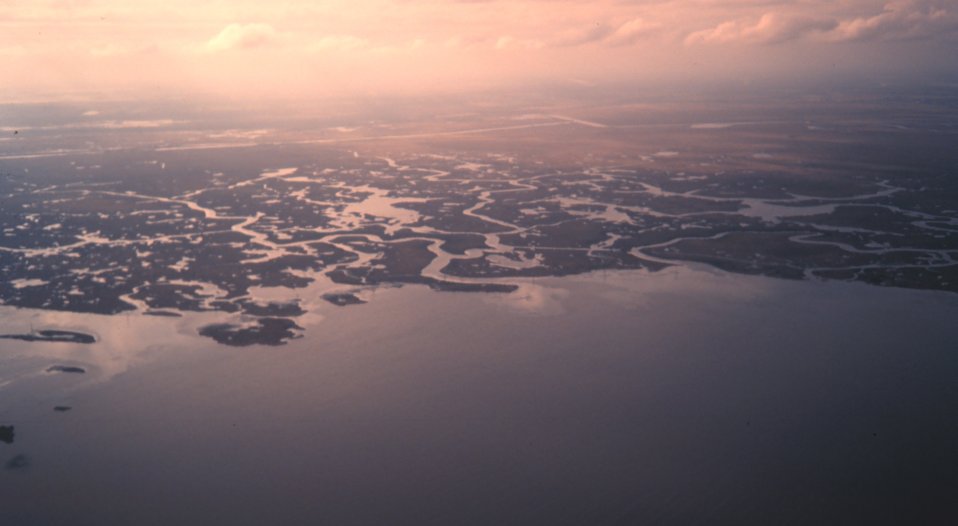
A view of the wetlands adjacent to Barataria Bay south of New Orleans